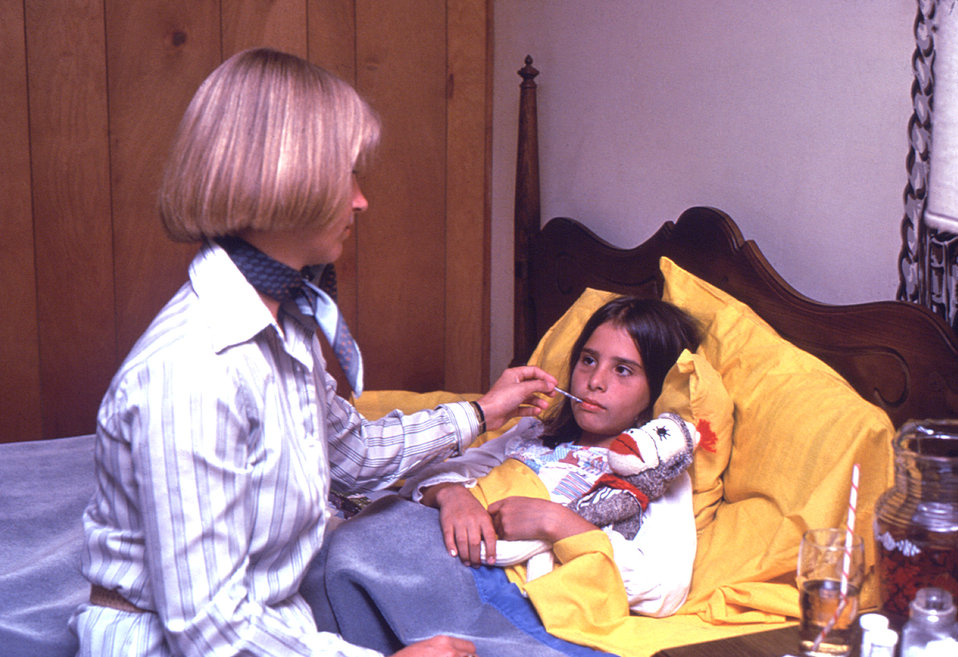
This photograph shows a mother caring for her child who is in bed suffering from a cold.